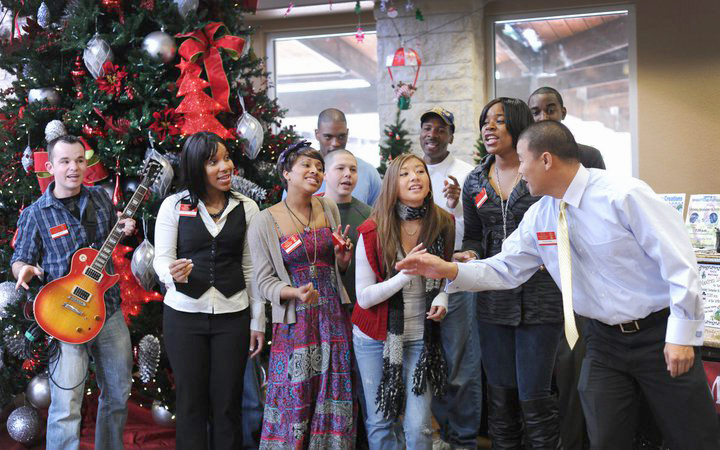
Airmen win honors at worldwide talent search

Contestants for the 2011 Tops in Blue worldwide team sing holiday songs for servicemembers and their families Dec. 11, 2010, at the Fort Sam Houston Warrior Center in San Antonio, Texas. The Warrior Center provides meals, shelter, education, and various programs for wounded warriors have been injured in battle. The Tops in Blue team has developed the Give Back program that allows annual contestants to sing holiday songs for servicemembers to provide encouragement and morale support.